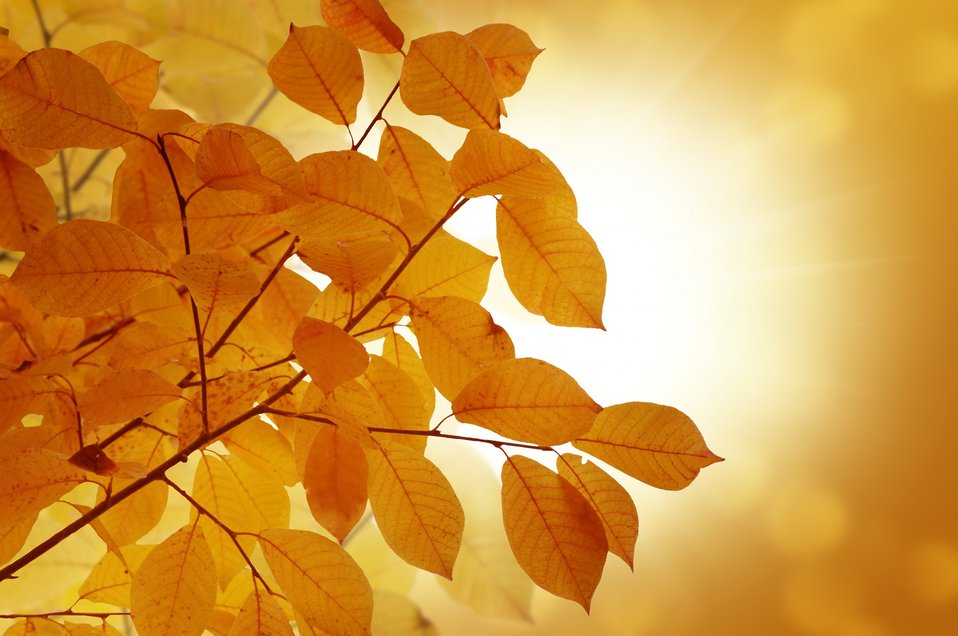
Autumn background

Autumn leaves background of beautiful cherry.